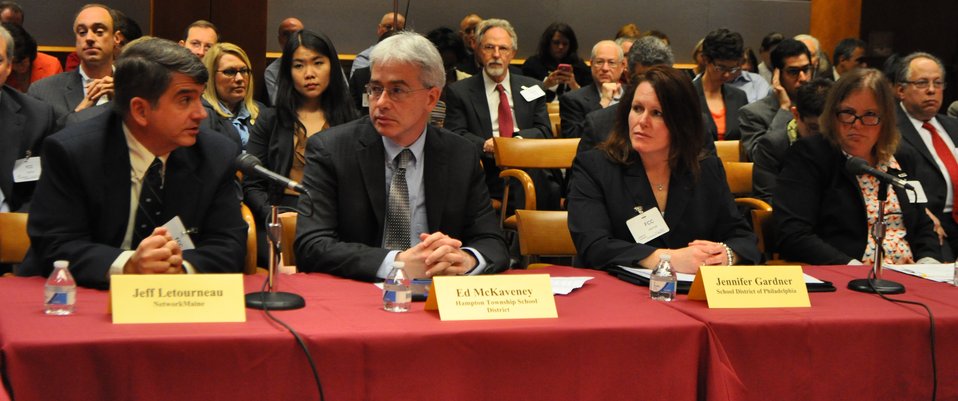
5.6.2014 E-Rate Modernization Workshop

Education and Library Technology Experts Roundtable: Enabling the Lowest “E-rate” for Schools and Libraries